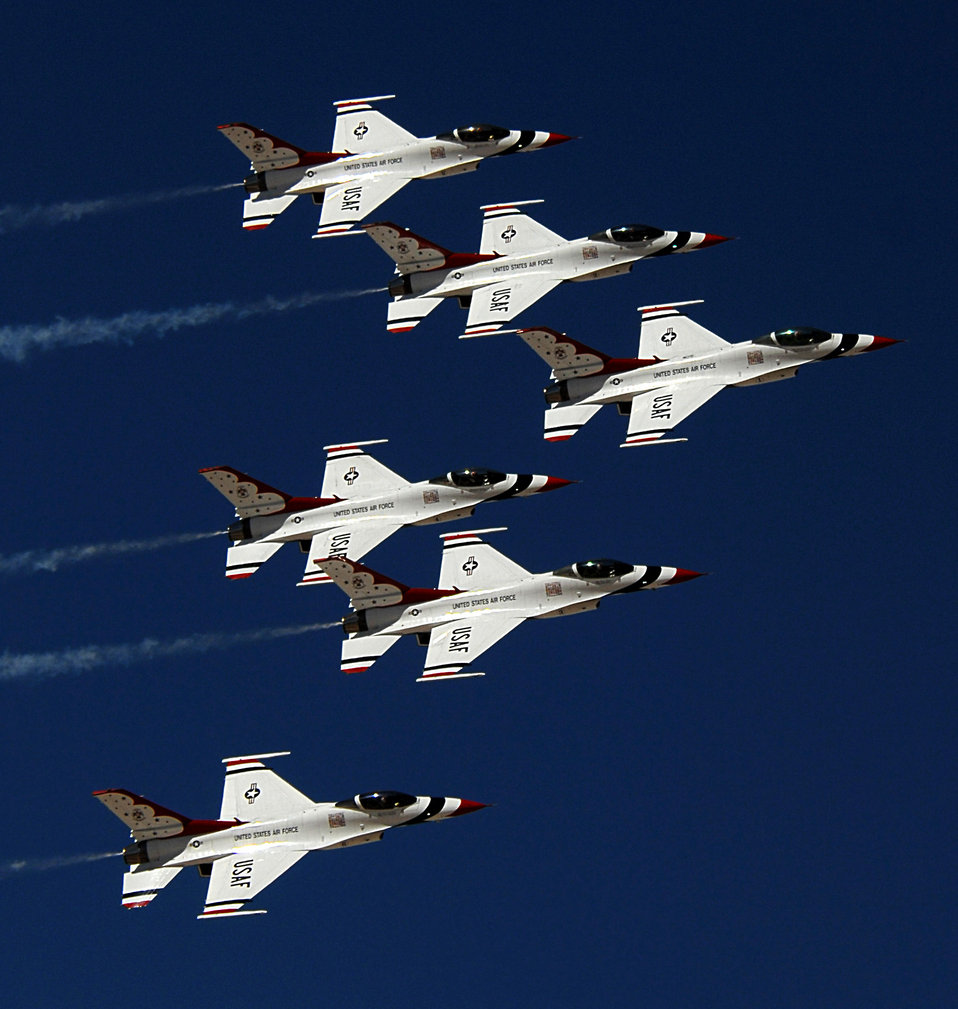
Ready for a new air show season

The Air Force Thunderbirds perform the